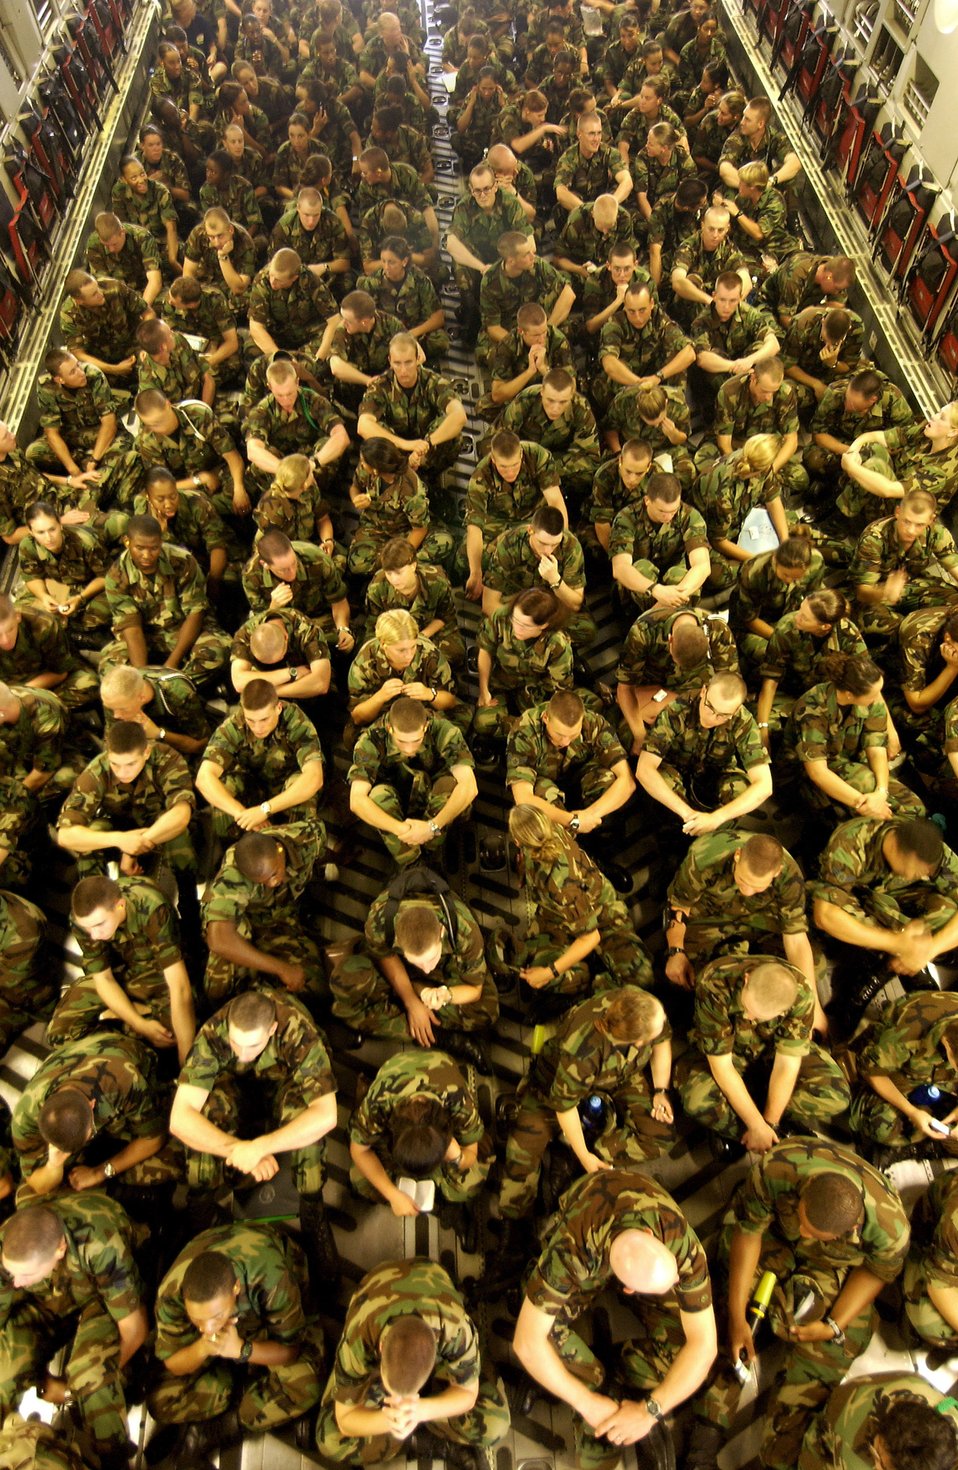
Keesler evacuation

KEESLER AIR FORCE BASE, Miss. -- Students with the 332nd and 335th Training Squadrons here prepare to be evacuated to Sheppard Air Force Base, Texas, aboard a C-17 Globemaster III from the 58th Airlift Squadron, Altus AFB, Okla., Sept. 1. More than 2400 students and non essential personnel will be evacuated from Keesler because of Hurricane Katrina's aftermath.